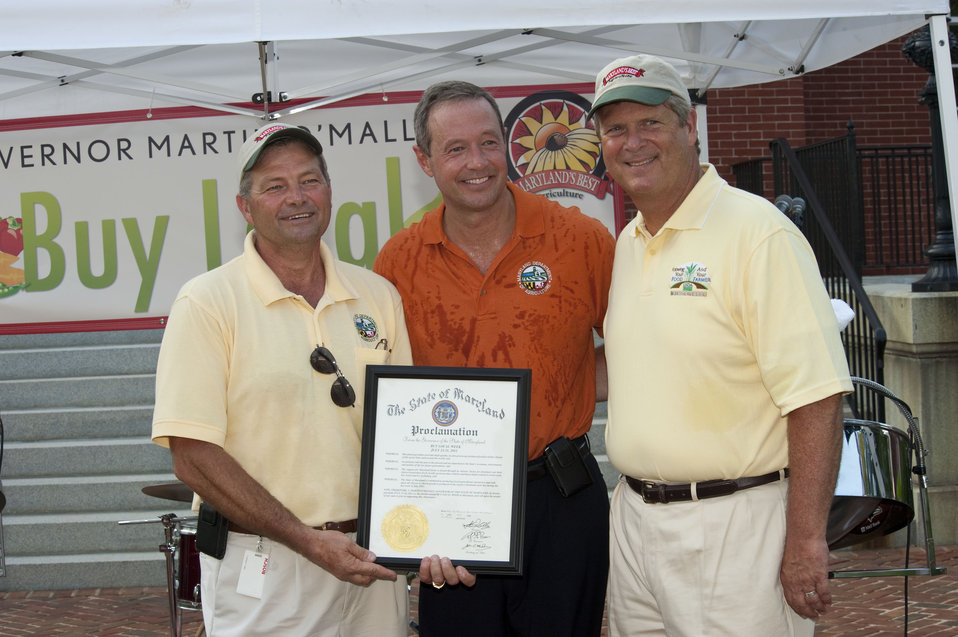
Left to right Maryland Secretary of Agriculture Buddy Hance, Maryland Governor Martin O’Malley, and Agriculture Secretary Tom Vilsack, at the 4th Annual Buy Local cookout held in Annapolis, MD, on Thursday, July 21, 2011.